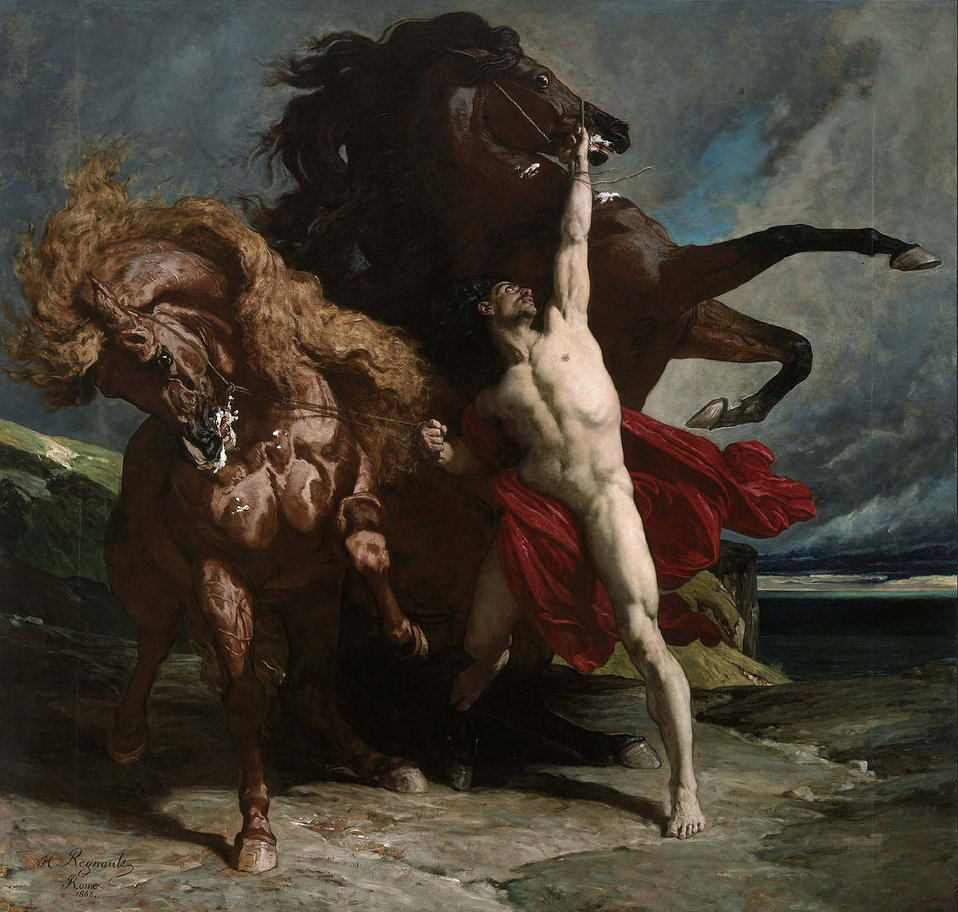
Automedon